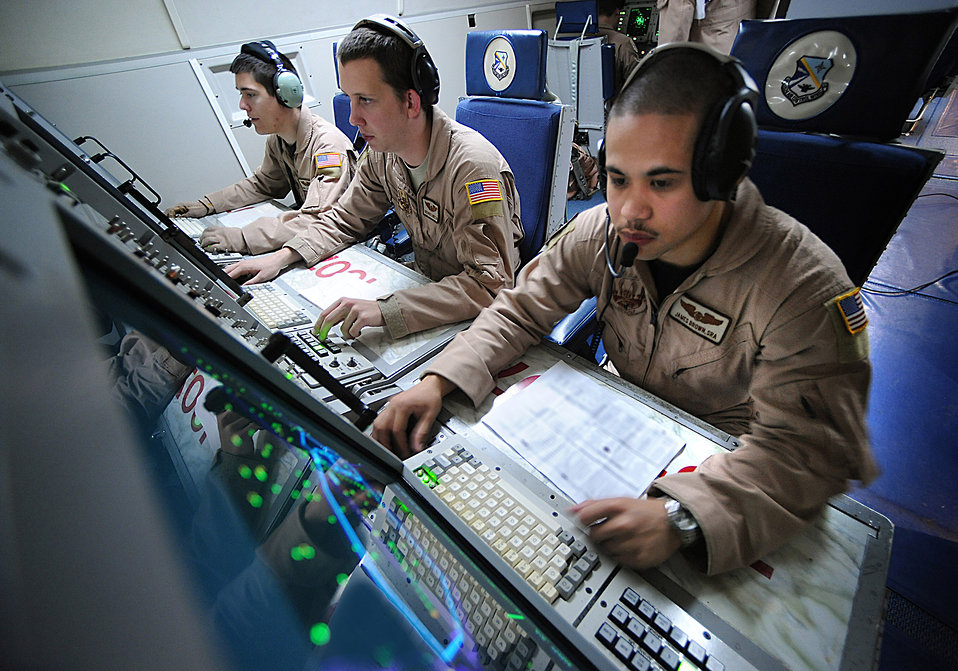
Airmen provide key support to multinational exercise

E-3B Sentry airborne warning and control system surveillance technicians from the 965th Expeditionary Air Control Squadron track simulated hostile aircraft during a multinational exercise Nov. 9 over Southwest Asia.